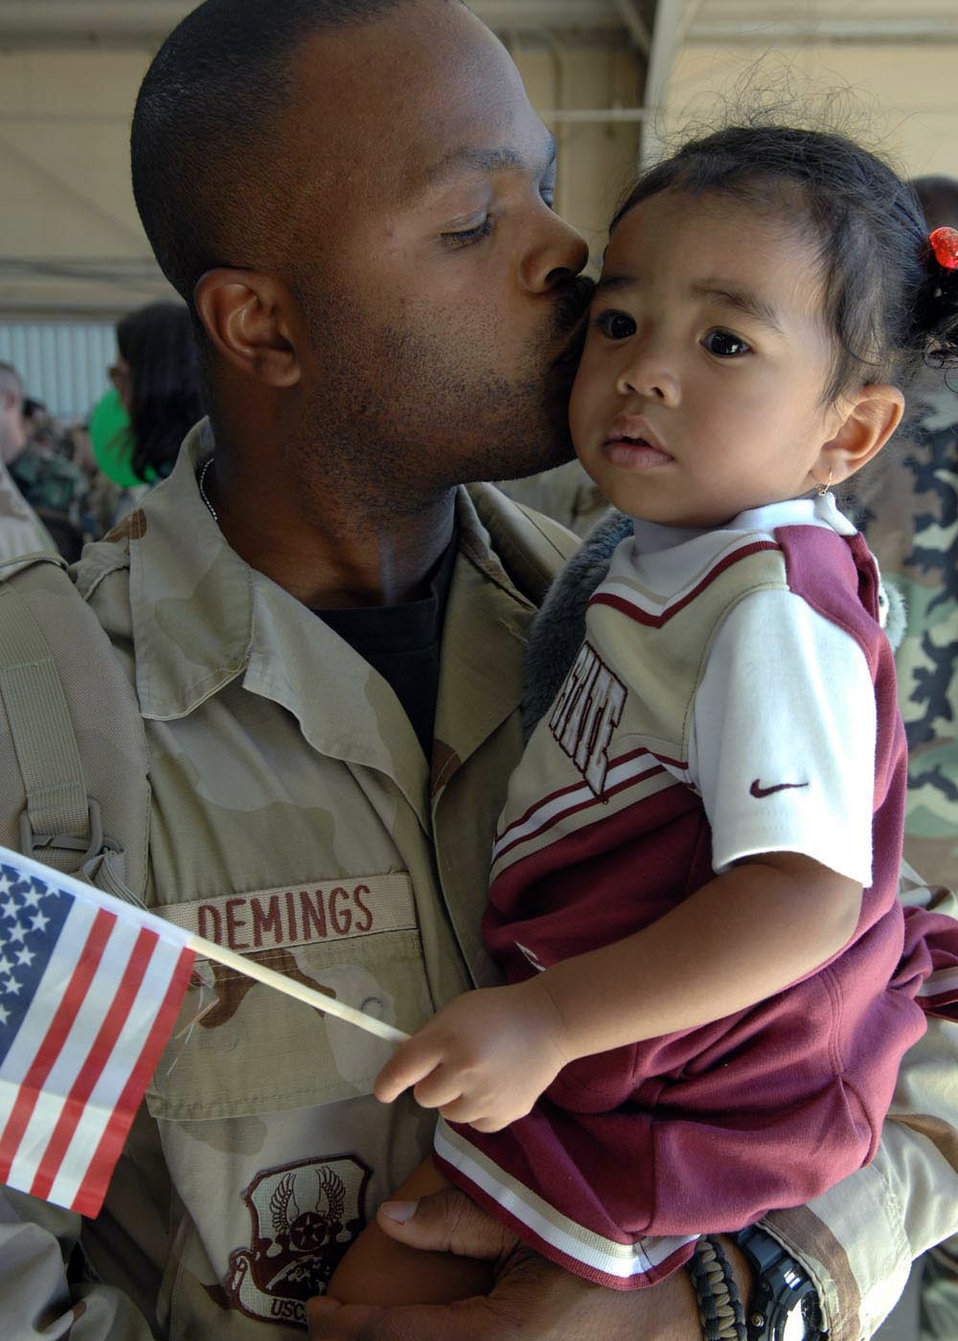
Hugs, kisses, handshakes for returnees

Tech Sgt. Kenyatta Demings kisses the forehead of his 19-month-old daughter Myka, after returning to home Oct. 23 from a deployment to Afghanistan. Sergeant Demings is a munitions inspector assigned to the 355th Equipment Maintenance Squadron, at Davis-Monthan Air Force Base, Ariz.